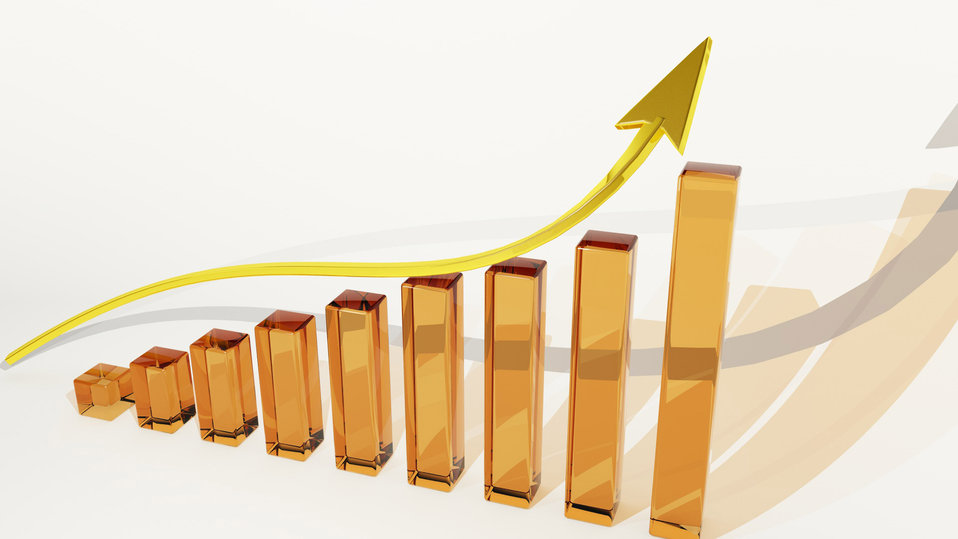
Business graph

Business profit growth graph.